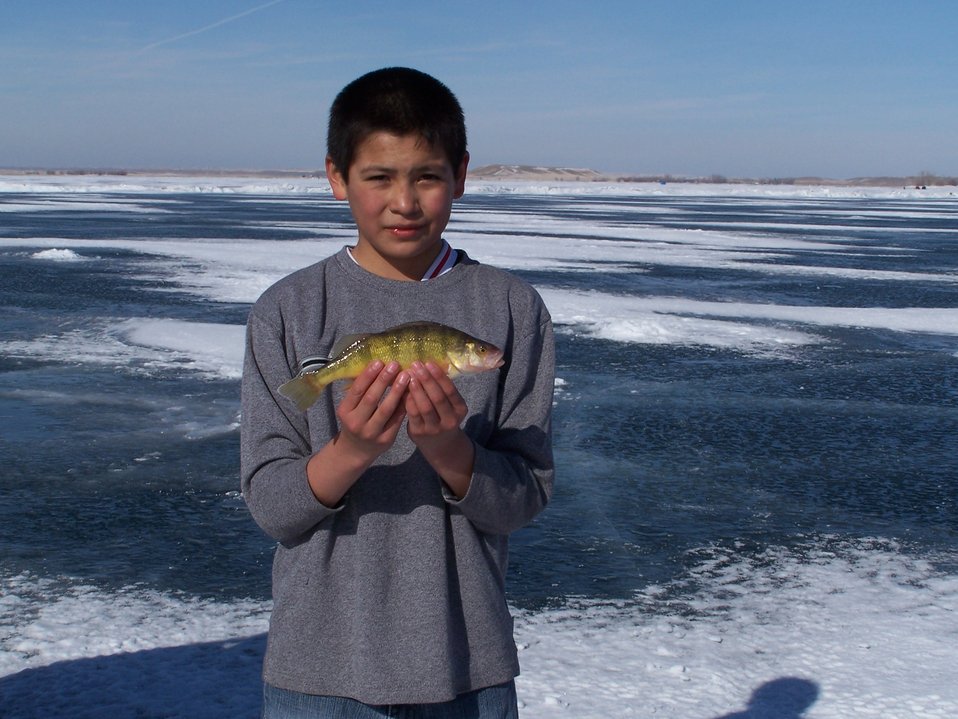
Ice Fishing, Bowdoin WMD